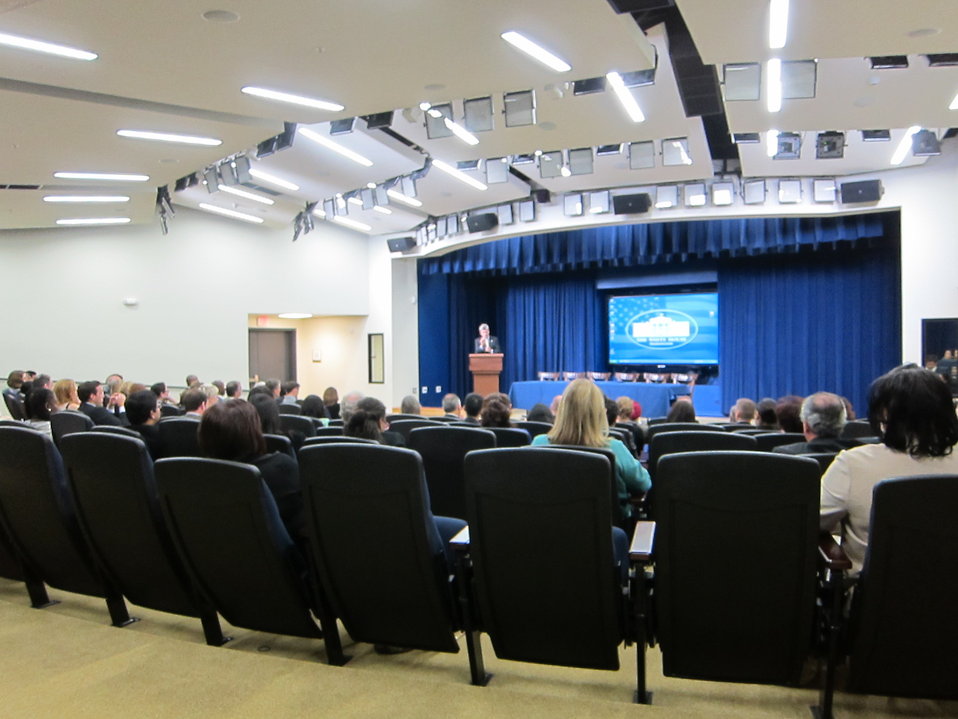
WH 2012 World Hepatitis Day Event